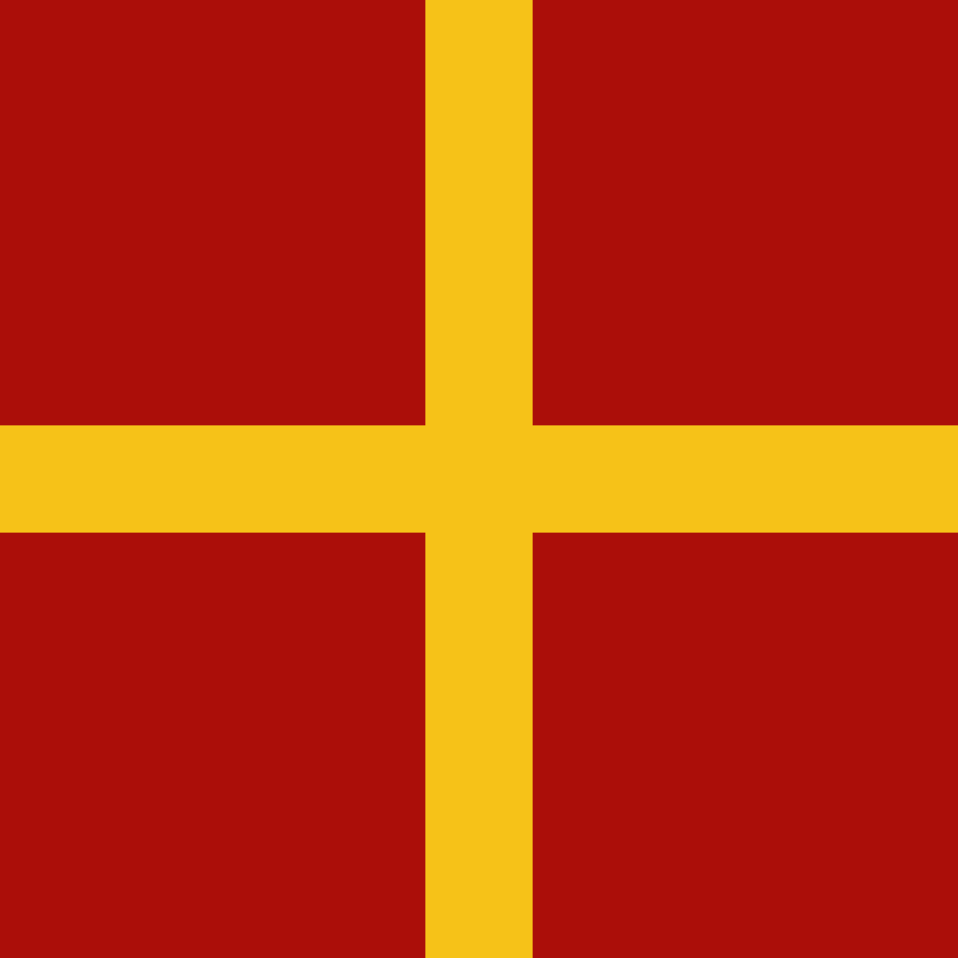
Flag depicting the Arms of the Palaiologos [Palaeologus] family in use before the ascent of Michael VIII Palaeologus to the imperial throne of the Byzantine Empire (1080-1259). Originally petty rulers from Macedonia, the Palaiologi came to prominence after Alexius Palaiologos married Zoe Dukaina, daughter of emperor Constantine X. Gules, a cross Or.